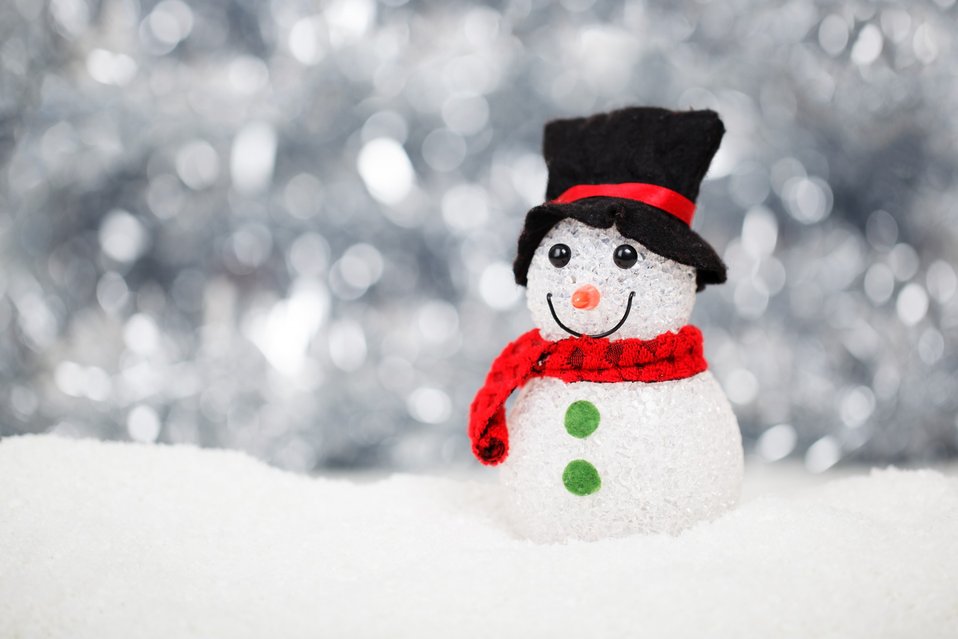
Snowman decoration

Snowman christmas decoration with snow and bokeh background.